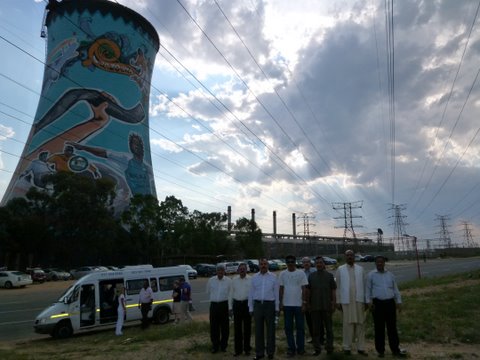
03 Nov - Delegation to SA under Utility Exchange Program 2

USAID Power Distribution Program in liaison with USEA organized a Utility Exchange Program in Johannesburg and Pretoria, South Africa from November 12- 19, 2011.Twelve delegates were selected from 9 DISCOS of Pakistan. The delegates visited the following number of power companies in South Africa:
1 .Johannesburg City Power
2. Tshwane Energy & Electricity Division
3. Eskom
The main focus of the Program was learning best practices and functions in Engineering Management, Planning and Operations. Such exposure visits will enable the DISCOs participants to support and propose such best practices and technological initiatives to improve utility business in Pakistan.